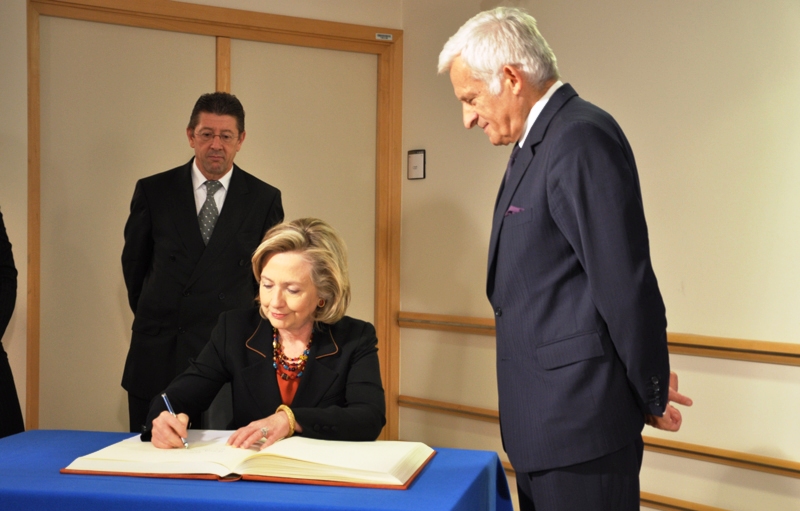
Secretary Clinton Signs the European Parliament President’s Guest Book

U.S. Secretary of State Hillary Rodham Clinton signs the President of the European Parliament’s Guests Book during their meeting in the European Parliament building in Brussels, Belgium, on October 14, 2010.